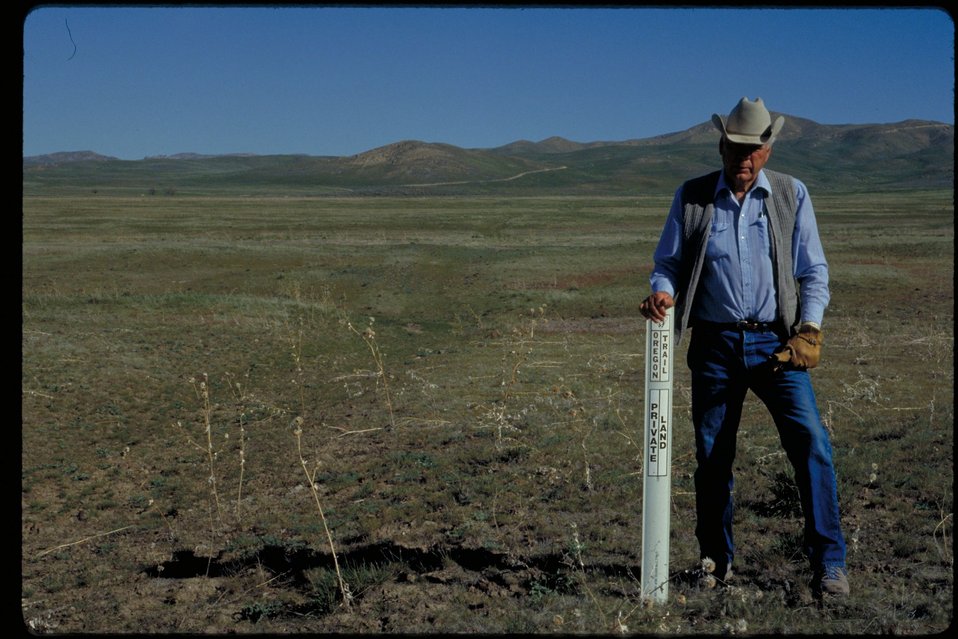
Oregon Trail west of Canyon Creek Lower Snake River District